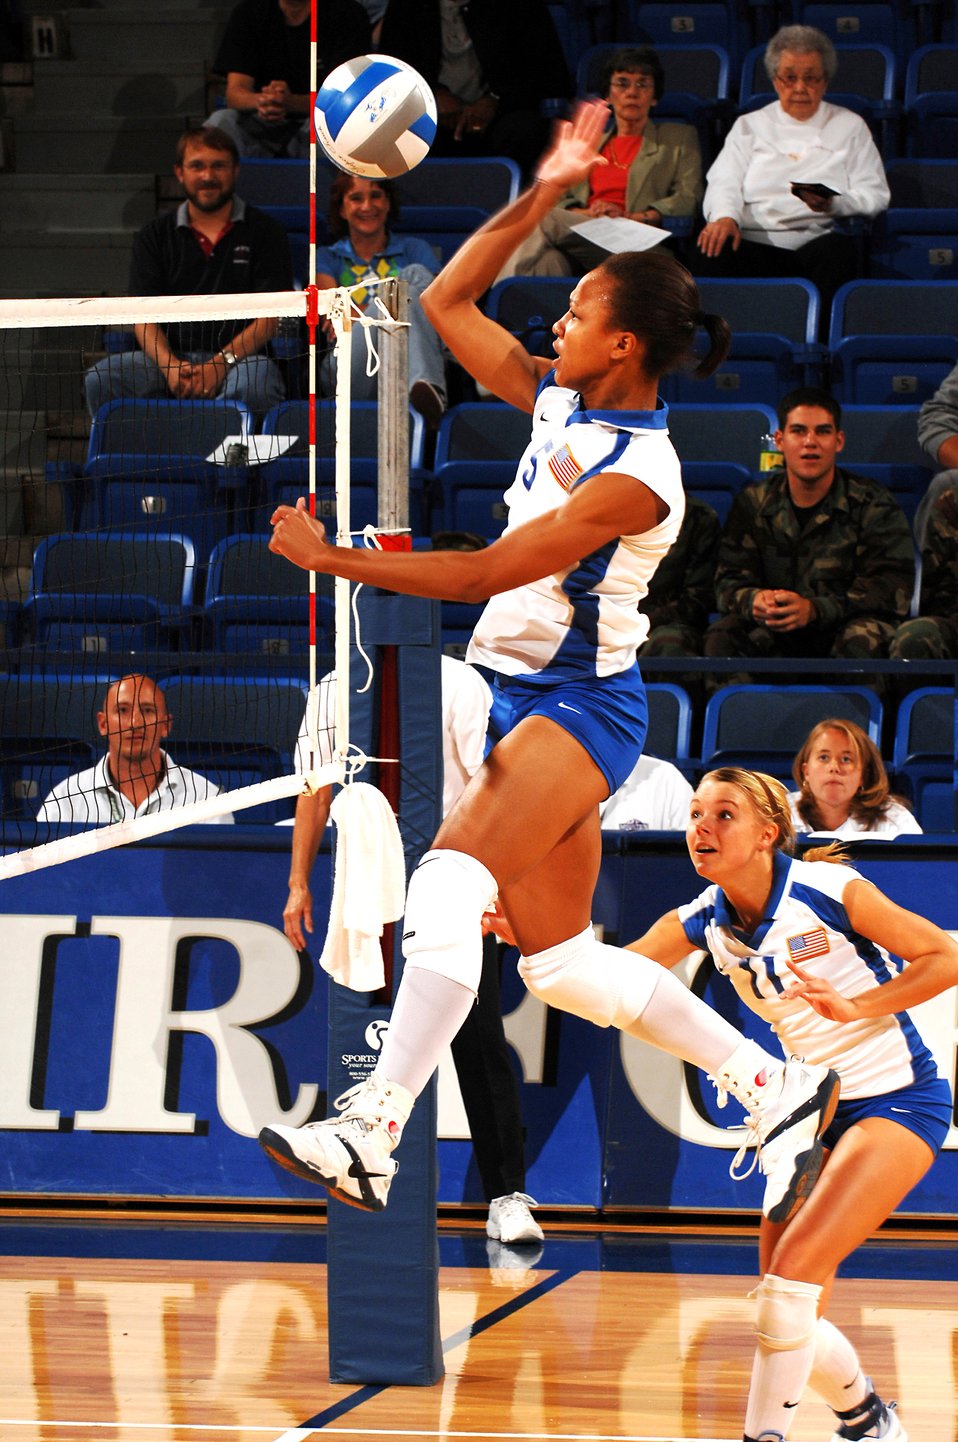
Volleyball: Falcons fall to Utah

U.S. Air Force Academy sophomore Jocelyn Booker goes to great heights against Utah in volleyball action as the Falcons were swept in three sets Sept. 28 at Clune Arena at the Academy in Colorado. The Falcons return to the road to take on the San Diego State Aztecs Oct. 4 before heading to face the University of Nevada, Las Vegas Oct. 6.